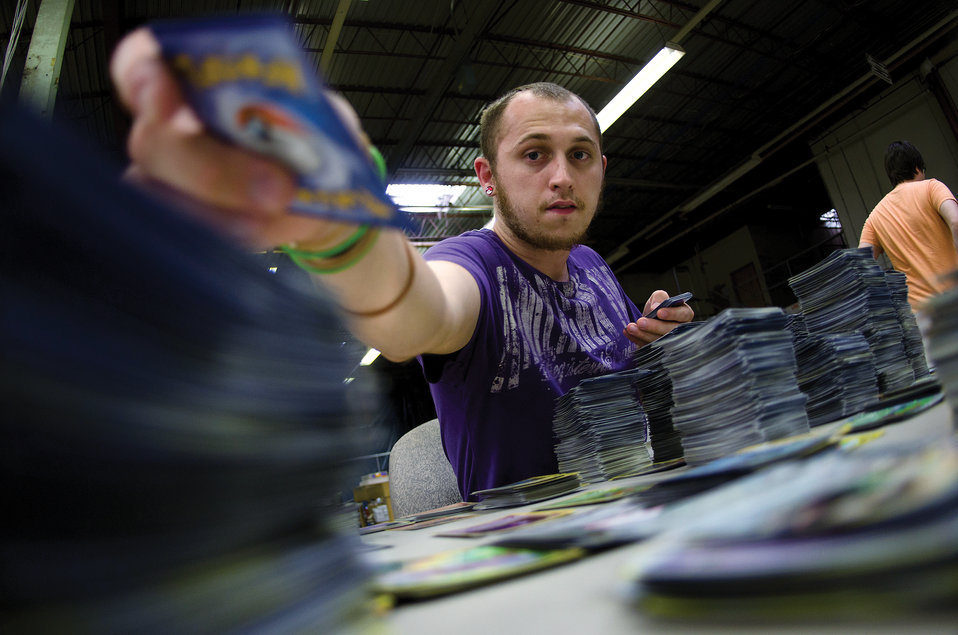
An employee of Troll&Toad.com, an online retailer of games, sorts specialty collector cards for purchase and resale at the company's new headquarters in Corbin, Ky. John Huston created the business in his home in 1993 selling only one type of game. The business is now located a one million square-foot building that used to house an American Greetings production facility. With a growth rate of 299 percent of the past three years, the company placed No. 51 in the retail sector in the 2010 INC MagazineÆs list of the 5000 fastest growing companies in the nation. That growth was assisted by Rural DevelopmentÆs Business and Industry Guaranteed Loan Program. The company received $4.9 million to finance the building purchase and expansion.